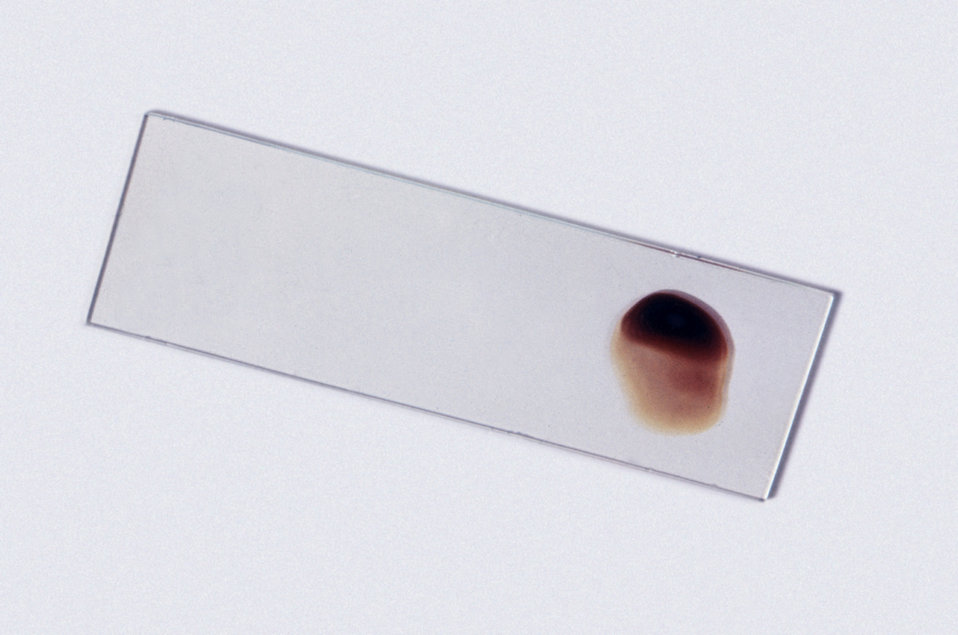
In this slide preparation the thick film was allowed to dry on an uneven, slanted surface rendering an improper result.